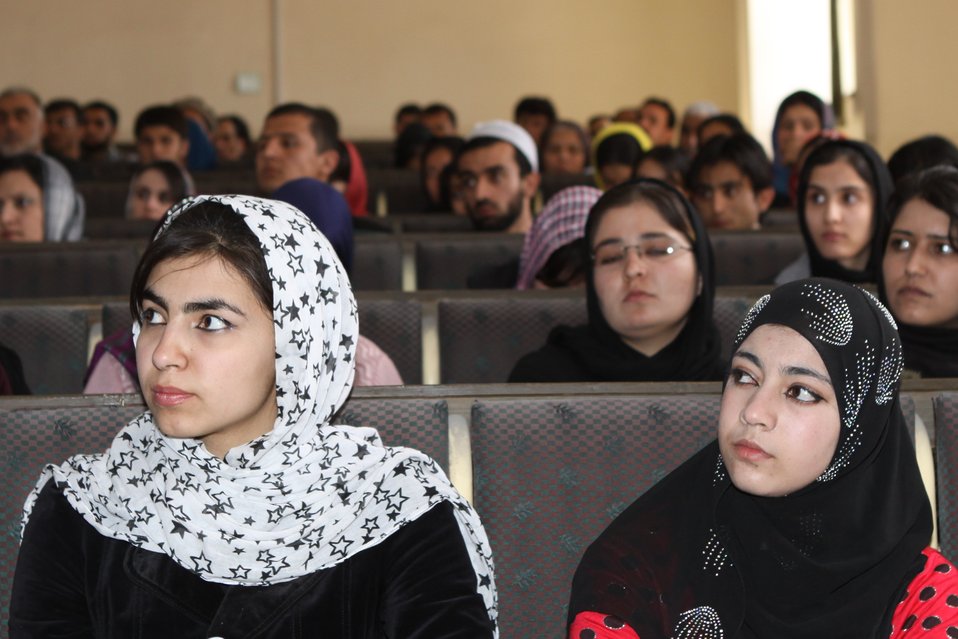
Female University Students Complete Internship

Kabul, Afghanistan | March 16, 2011 – In response to a demand for qualified Afghan engineers, Kabul University celebrated completion of an intensive five-month Mentor Protégé Training Program today by 10 female fourth year university students. The Training Program is a joint effort between the Government of the Islamic Republic of Afghanistan, the U.S. Agency for International Development (USAID), and the Universities of Kabul, Kandahar, Alberoony in Kapisa, Shiekh Zayed in Khost. The graduation ceremony highlighted collaboration with these national institutions in building the technical skills of young Afghans, made possible by USAID.

Four of the interns are engineers, while the remaining six are from the faculties of computer science, economics, and psychology.

Speaking about the event, H.E. Minister of Public Works Abdul Qudus Hamidi said, “The future of Afghanistan lies in developing the skills of our youth, and the engineering skills of these graduates today represent a small but important step forward for the country.”

Keynote speakers at the ceremony included H.E. Deputy Minister of Higher Education Abdul Rahim; USAID Senior Deputy Mission Director Robert Hellyer; and Chancellor of Kabul University Professor Hamidullah Amin. Approximately 150 people, including current and former students attended the graduation.

Launched last year, the Mentor Protégé Training Program has provided qualifying students the opportunity to intern with USAID’s Strategic Provincial Roads-South and East Afghanistan project and gain practical experience in a real work environment. The goal of the program was to offer interns the opportunity to gain hands-on experience to reinforce their formal studies. A total of 30 students from four national universities have benefitted from this program.

“The promotion of women’s rights is integrated into the overall U.S. Government development strategy and can be found in key programs, including education, healthcare, security, rule of law, political participation, agriculture, and economic development,” said Robert Hellyer. “The U.S. Government is committed to the Afghan leadership of programs that directly enhance development, particularly as it relates to women’s issues.”

This event also highlighted the learning achievements of students and emphasized the importance of hands-on internship programs. The curriculum is designed to instill students with the knowledge and confidence to qualify for engineering positions upon completion of their fourth year at their respective universities.